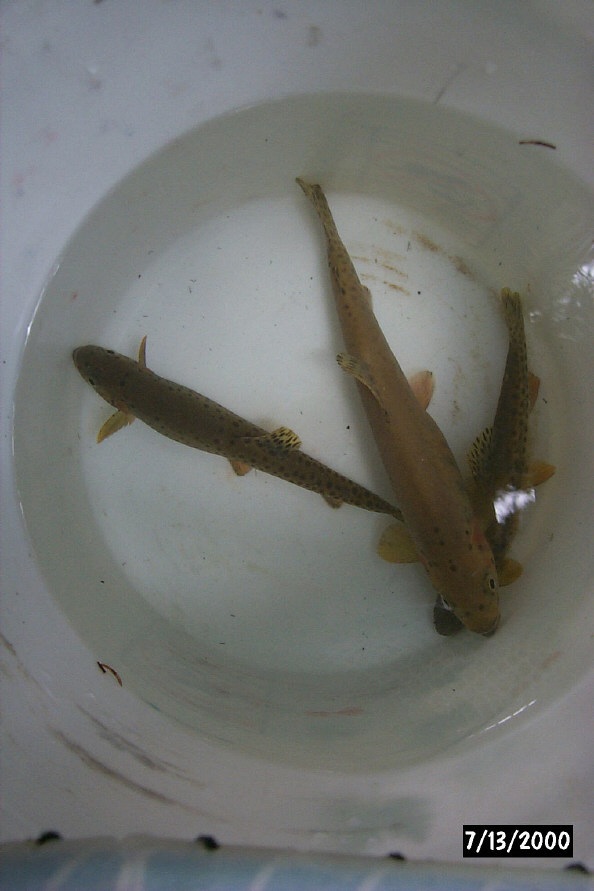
Trout Bucket Salmon Field Office UCSC Upper Columbia Salmon Clearwater District